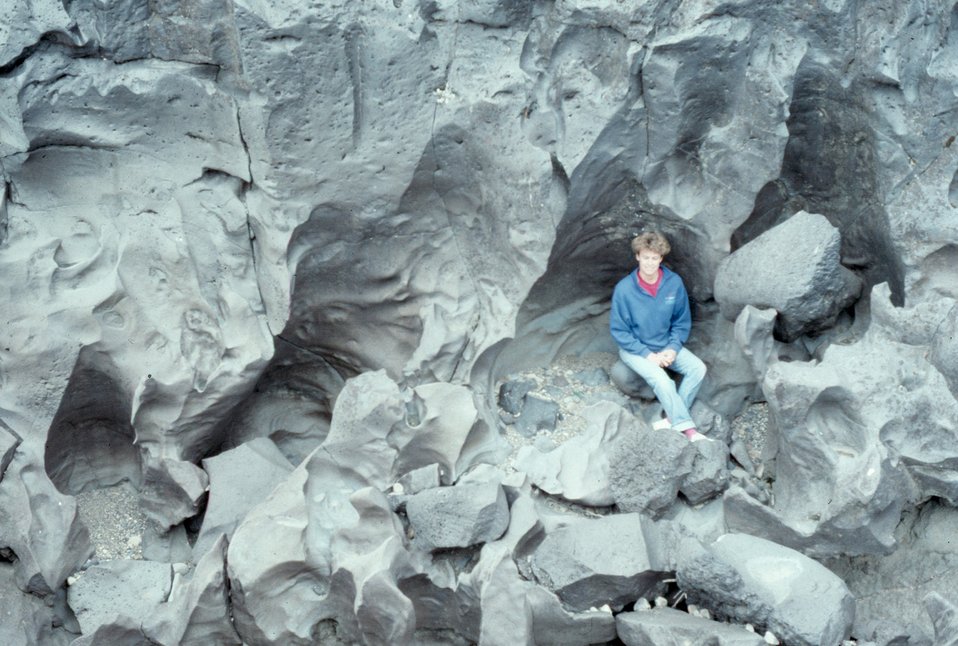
Pothole Shoshone Field Office USRD Upper Snake River District